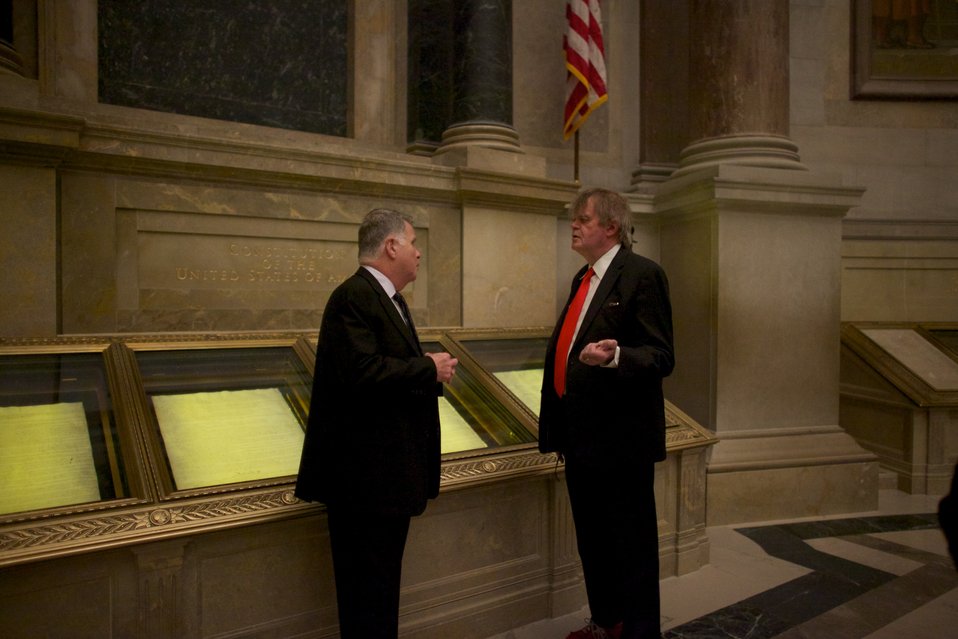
The Keillor Reader